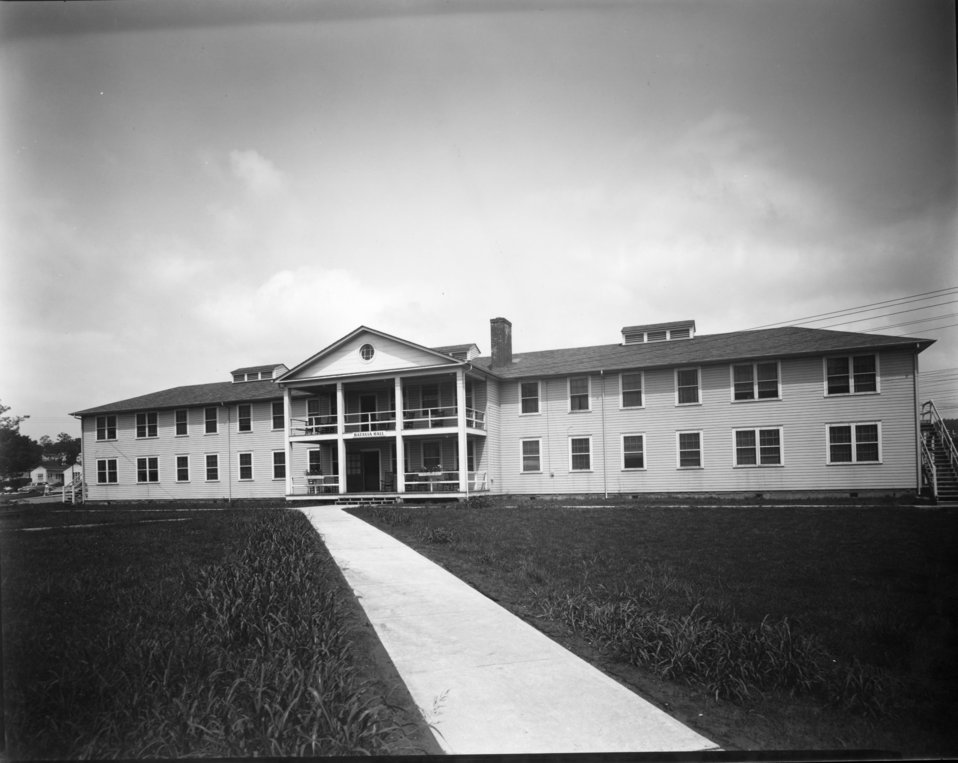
Housing at Oak Ridge